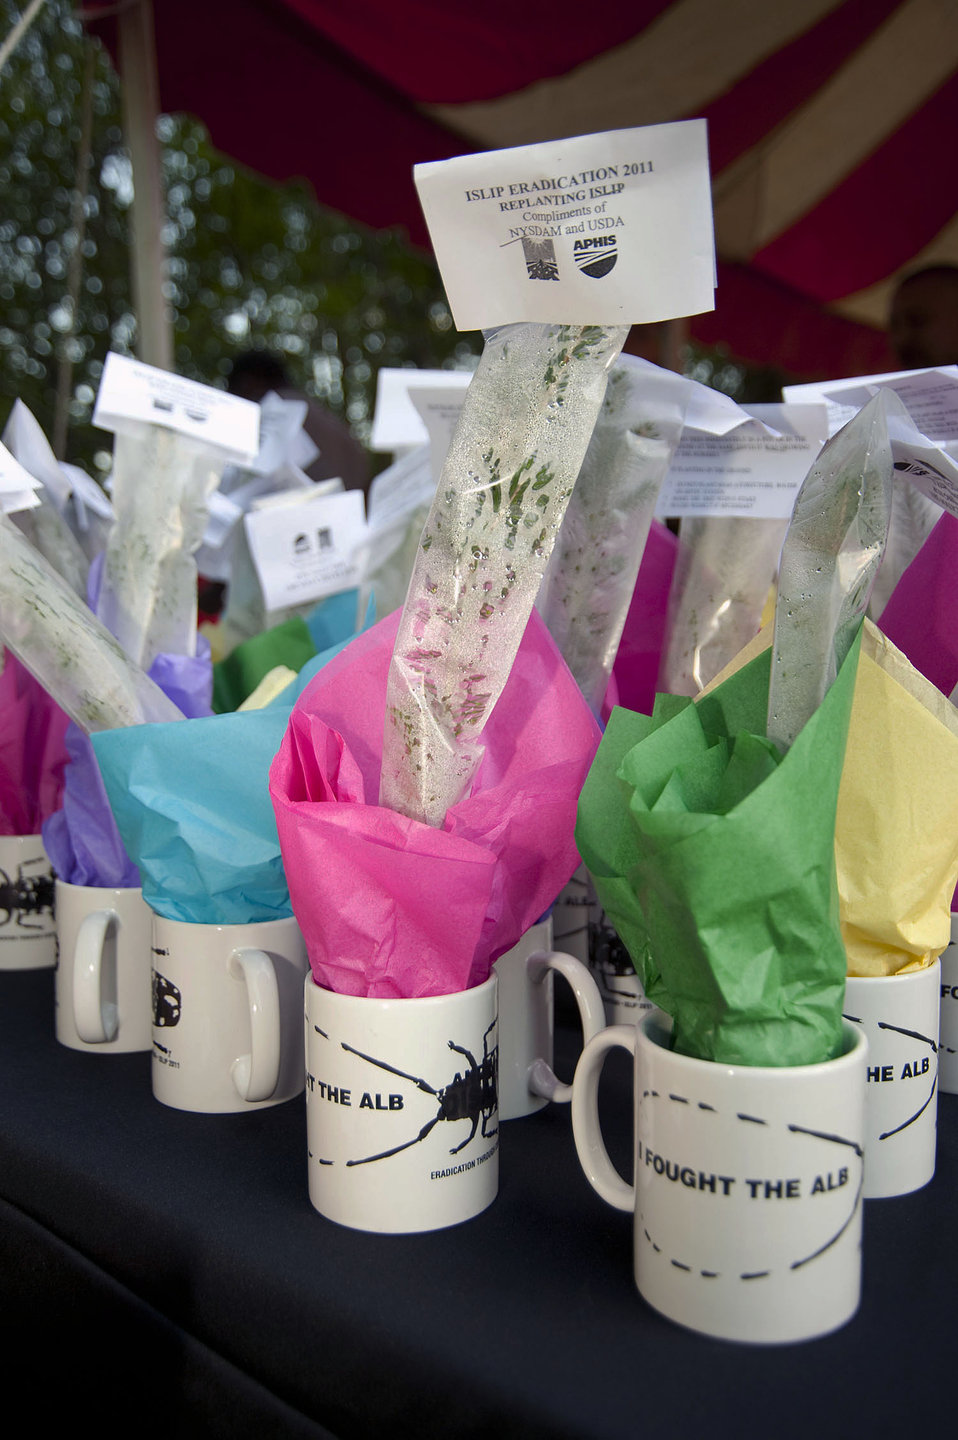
On Tuesday August 23, 2011, USDA Animal Plant Health Inspection Service along with state and local partners in New York State declared Islip New York free of the Asian Longhorned Beetle (ALB). The ALB is an invasive plant pest that is damaging to many species of hardwood trees; including Maple; Elm; Ash; Birch; Willow and Poplar trees. Norway Spruce tree gifts to replant Islip, NY.